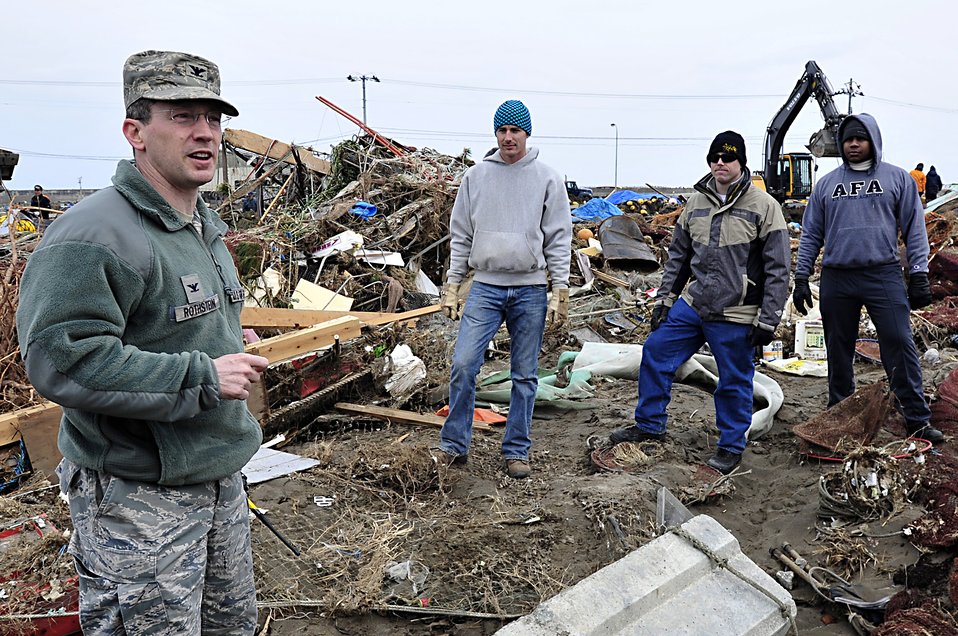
Misawa Air Base lends a helping hand

MISAWA AIR BASE, Japan -- Col. Michael Rothstein, 35th Fighter Wing commander, talks to Airmen at the Misawa City Port Mar. 15. Fifty Airmen and Sailors volunteered their time to clean up the area when Misawa City asked for support.